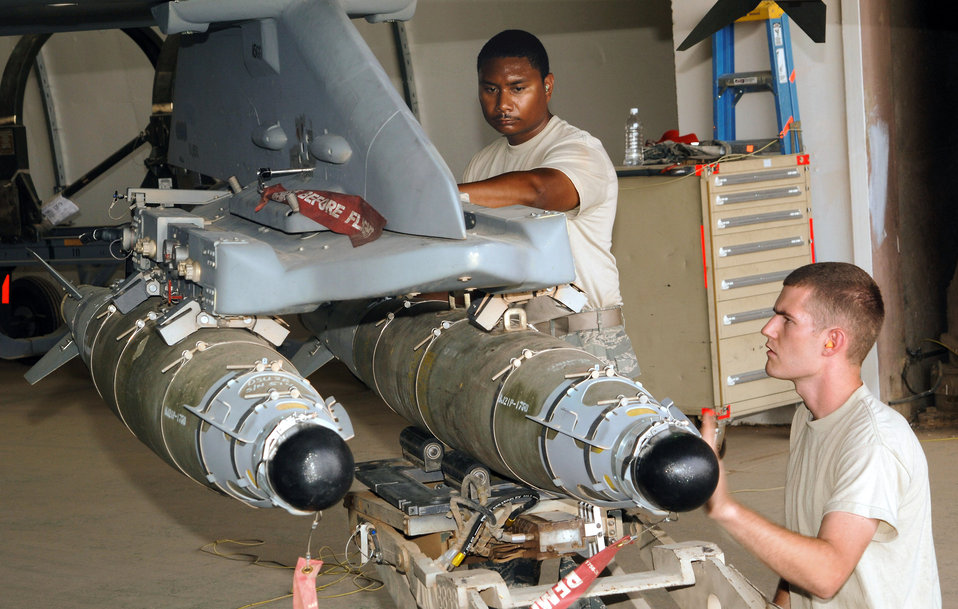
Airmen employ laser joint direct attack munition in Iraq

Staff Sgts. Michael Jackson and Anthony Bagen align a 500-pound guided bomb unit-54 laser joint direct attack munition before connecting it to an F-16 Fighting Falcon Aug. 14 at Joint Base Balad, Iraq. Two F-16 pilots with the 77th Expeditionary Fighter Squadron here employed a GBU-54 Aug. 12 against a moving enemy vehicle in the Diyala province to support a combined Iraqi army and U.S. Marine operation. Sergeant Bagen, a weapons load crew chief with the 77th EFS, is originally from Tampa, Fla. Sergeant Jackson, a weapons load crewmember with the 77th EFS, is originally from Union Springs, Ala. Both are deployed here from Shaw Air Force Base, S.C.